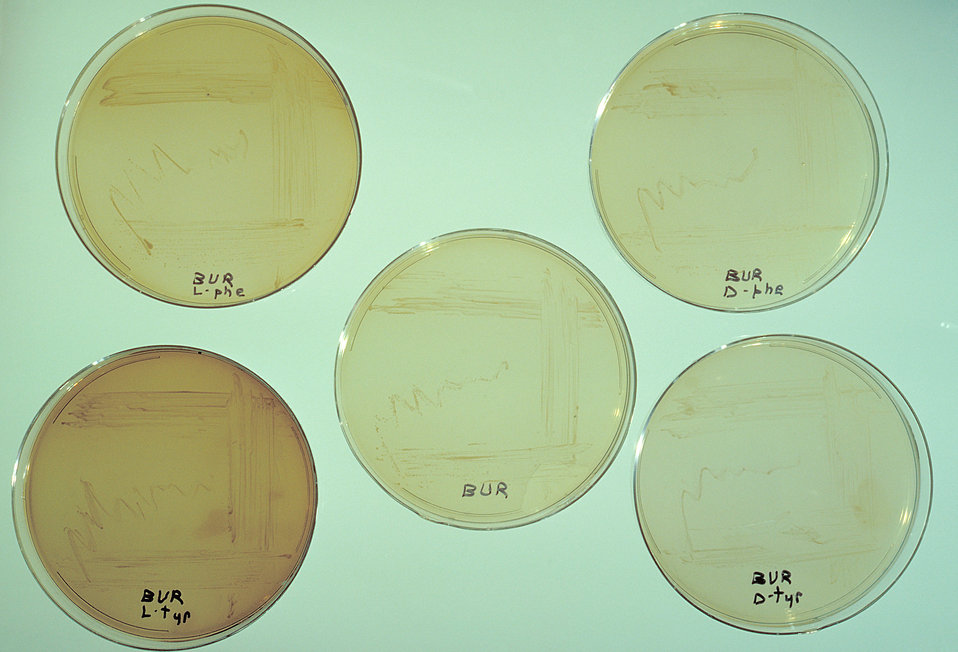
Agar plate cultures of various strains of Legionella pneumophilia.